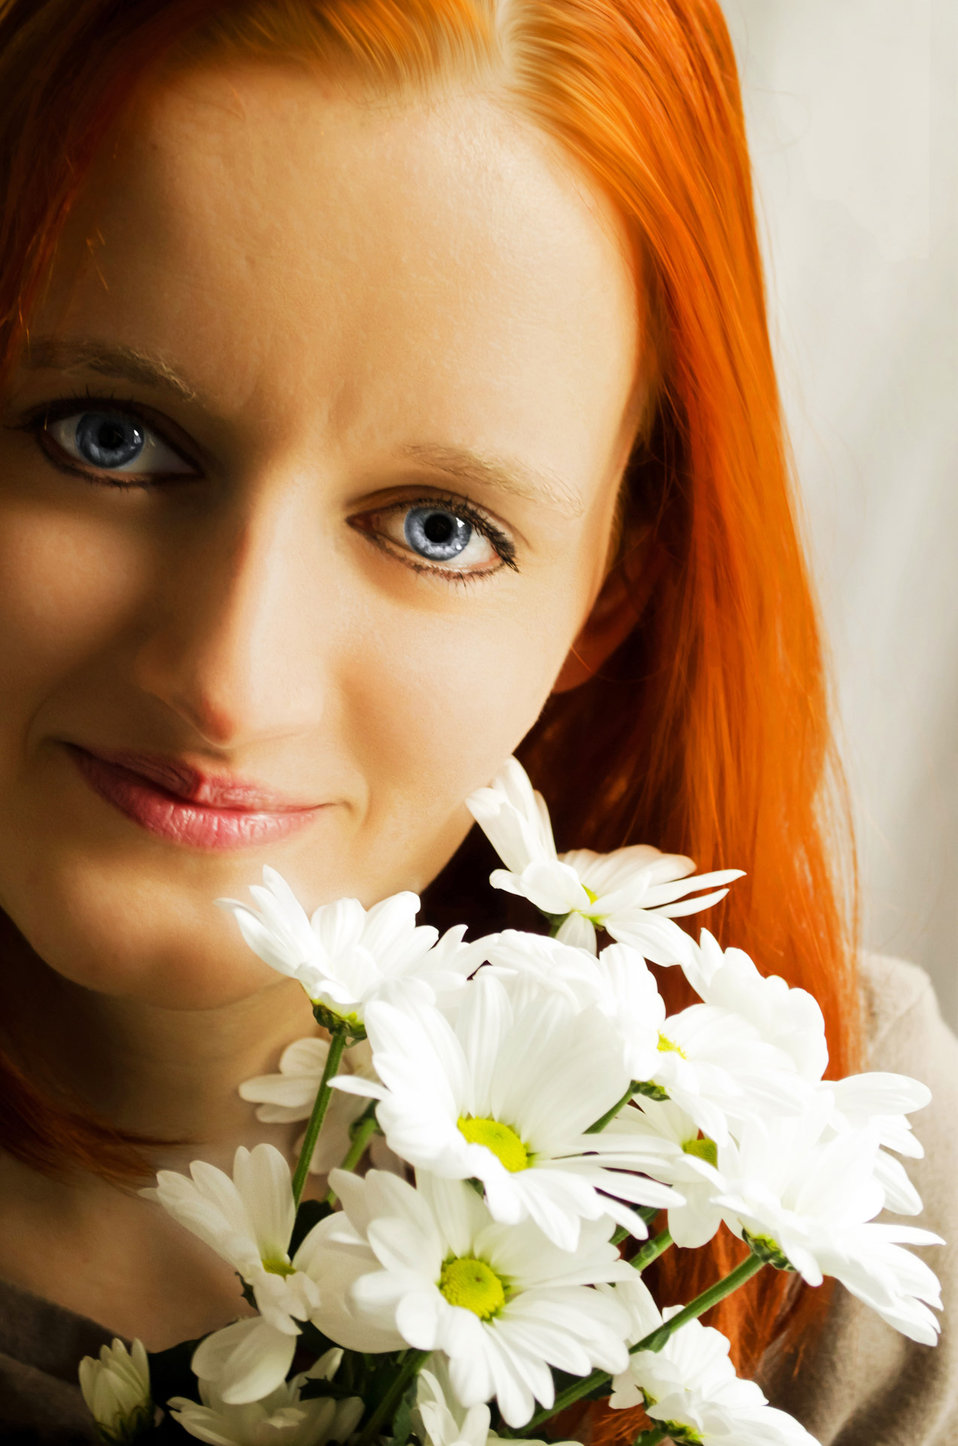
Woman with flower.